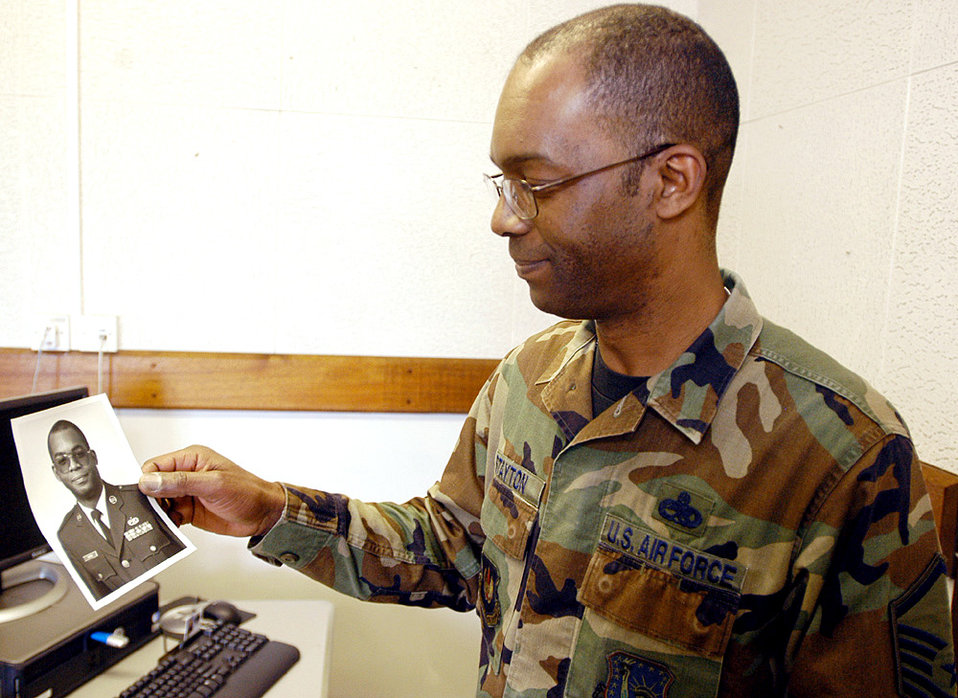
High alert in 1986

Master Sgt. Terry Stayton looks at a photo of himself from 1986, when aircraft from Royal Air Force Lakenheath destroyed military targets in Libya. He was a senior airman then. He is now an aerospace ground equipment production supervisor with the 48th Equipment Maintenance Squadron.